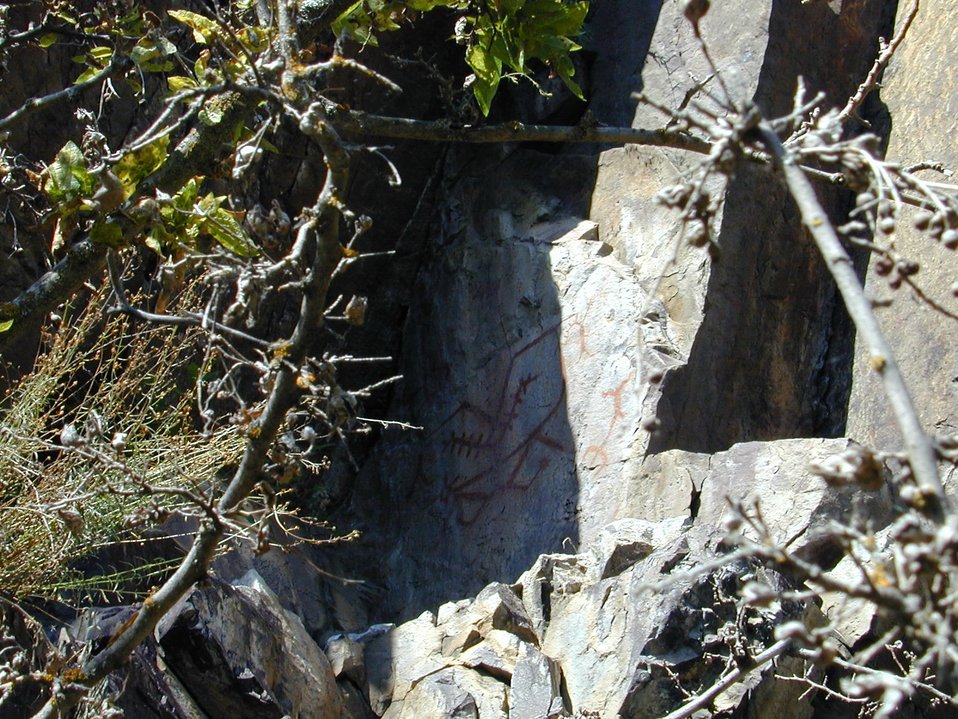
Cultural resources Petroglyphs on Lower Salmon River Cottonwood Field Office UCSC Upper Columbia Salmon Clearwater District